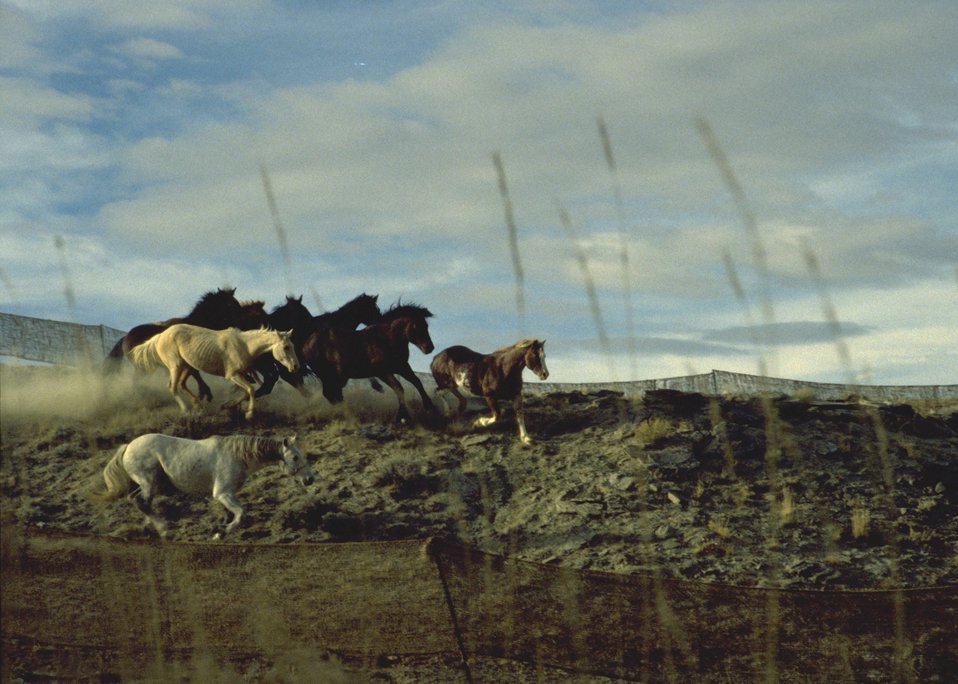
Wild horses.